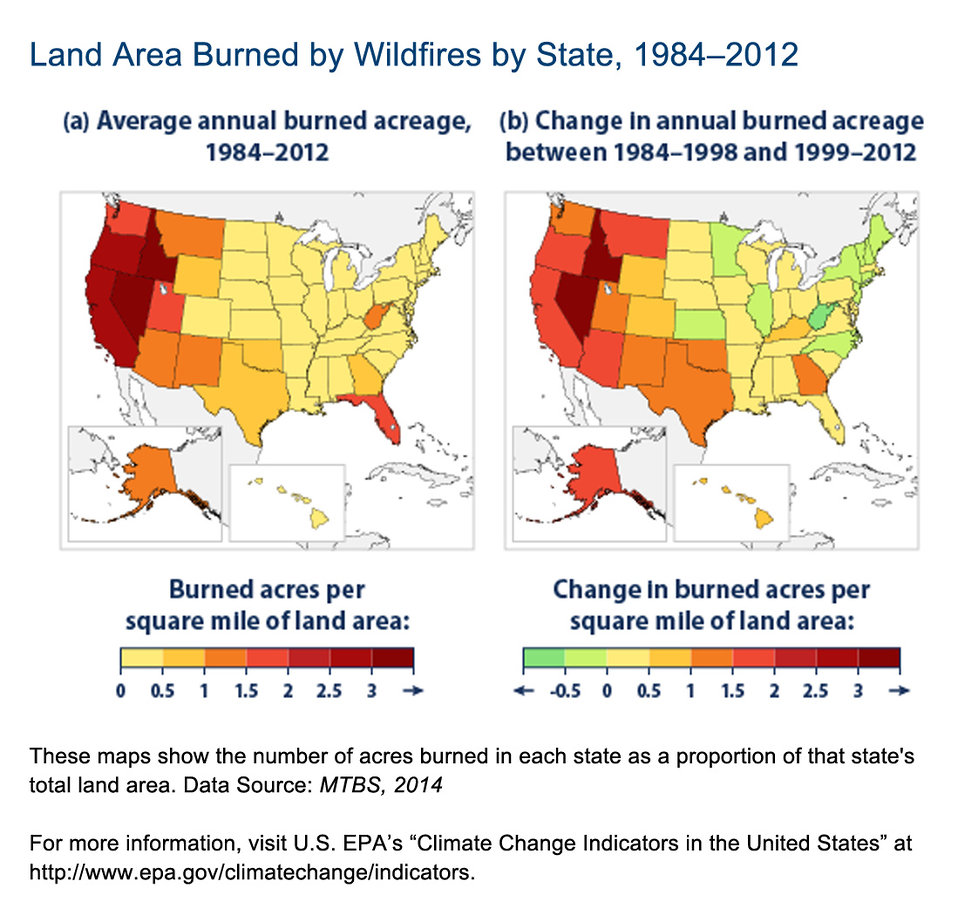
Wildfires

Since 1983, the United States has had an average of 72,000 recorded wildfires per year. Of the 10 years with the largest acreage burned, 9 have been since 2000.